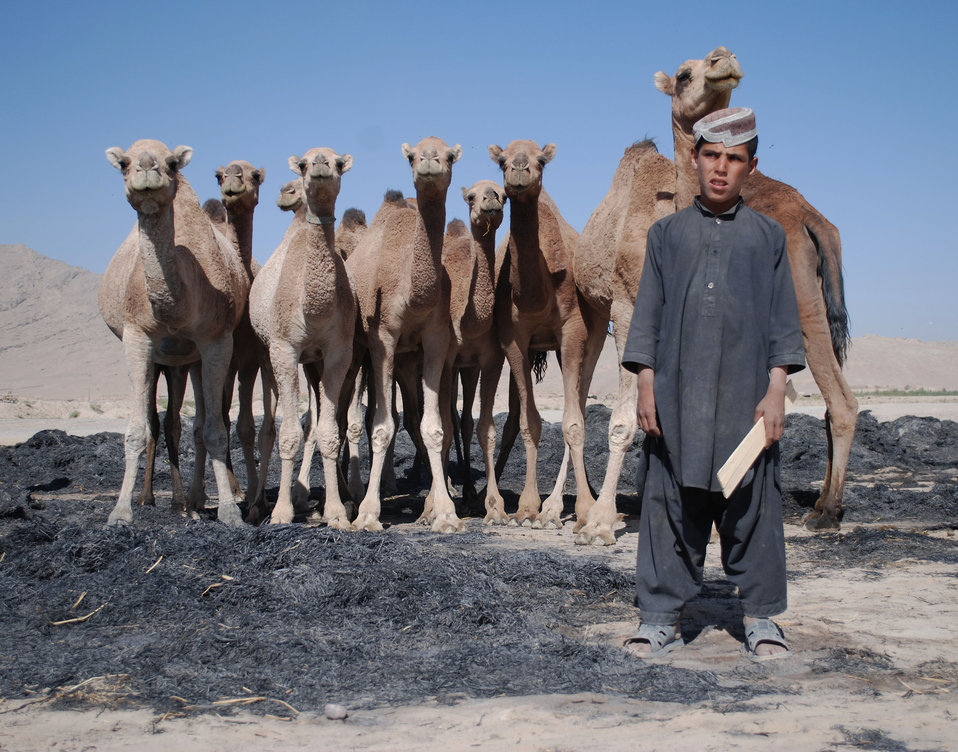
'On the Road' in Kandahar